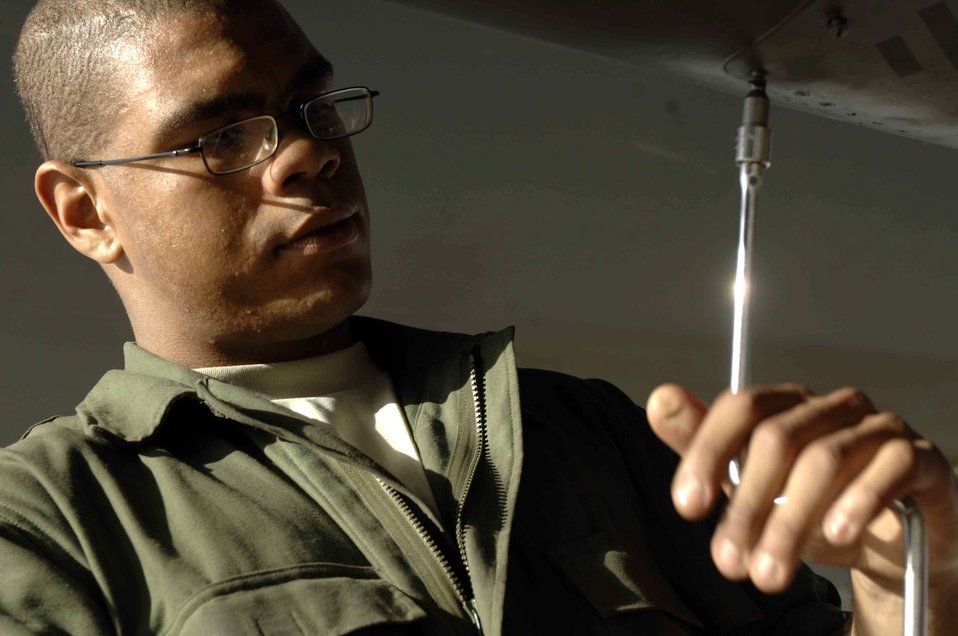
New phase inspection equates to lives saved

Airman 1st Class Darwin Gellizeau opens a panel on a F-15E Strike Eagle during maintenance Nov. 17 at Bagram Air Base, Afghanistaan. The maintainers recently became the first in the Air Force to implement a new inspection process that promises greater airpower capability throughout Afghanistan. Airman Gellizeau is with the 455th Expeditionary Maintenance Squadron.